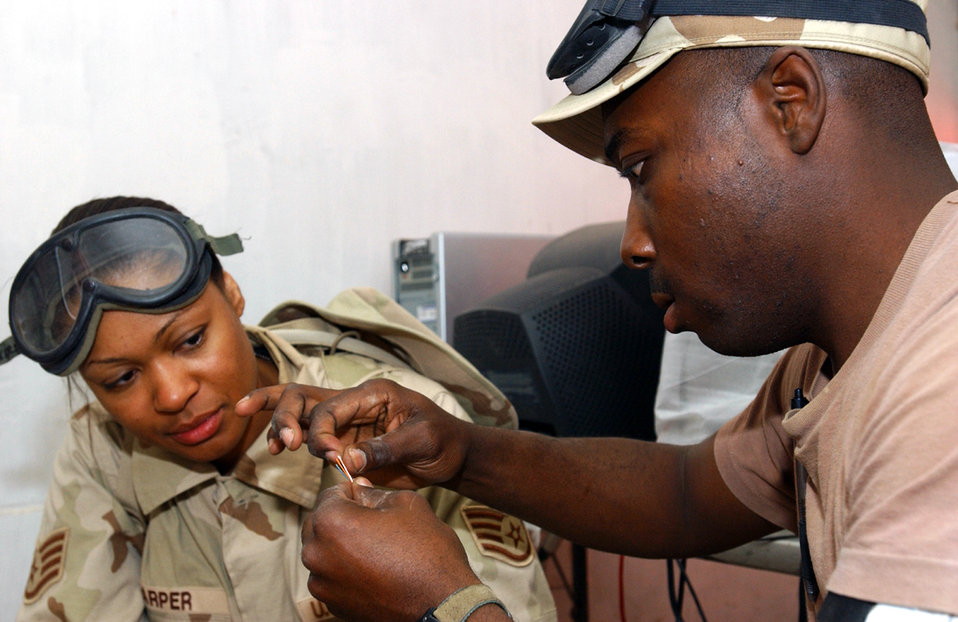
Connecting Iraq

OPERATION IRAQI FREEDOM -- Staff Sgt. Dennis King (right) shows Staff Sgt. Tarsha Harper how to build computer-network cable that will connect computers in the new communications facility at Tallil Air Base in southern Iraq. They are members of the 5th Combat Communications Group from Robins Air Force Base, Ga., which deployed to Tallil recently.